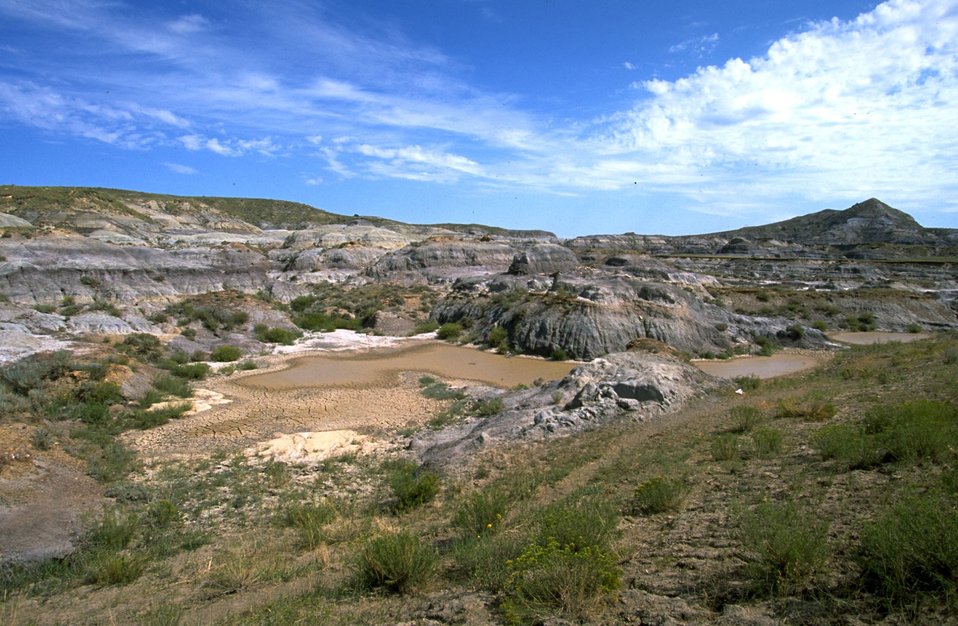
Sunset Butte--archaeological site within an oil field